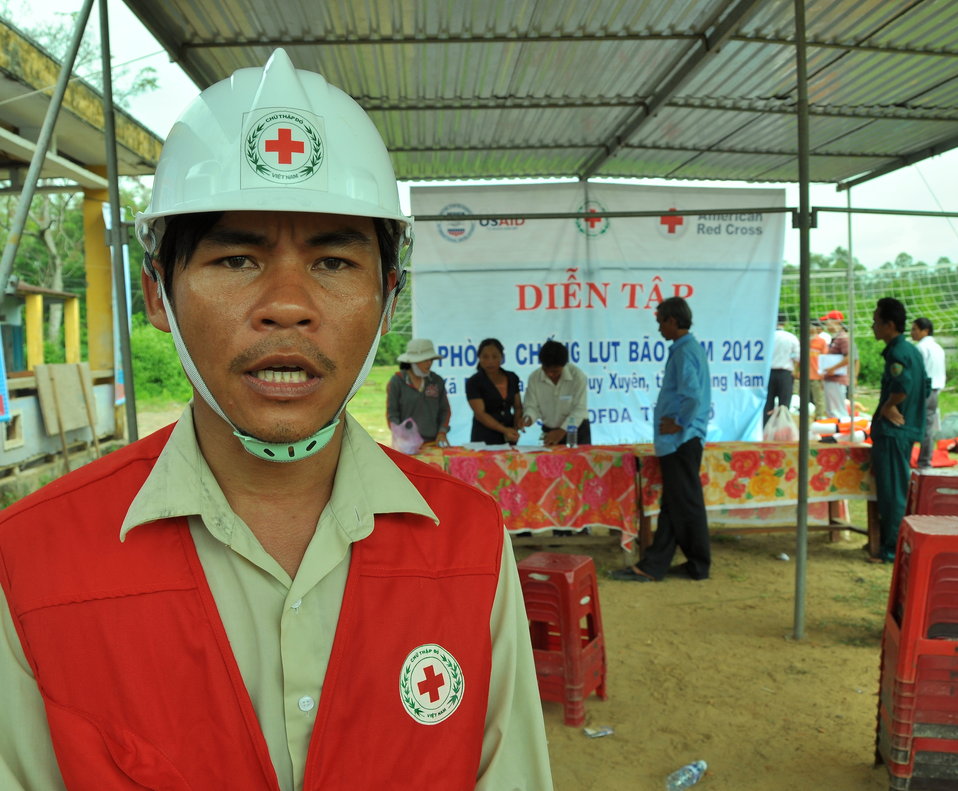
USAID, Red Cross Support Disaster Response Drill in Duy Hoa Commune, Quang Nam Province

Le Cong Muoi, the Emergency Response Team Leader in Duy Hoa Commune, Quang Nam Province
December 5, 2012